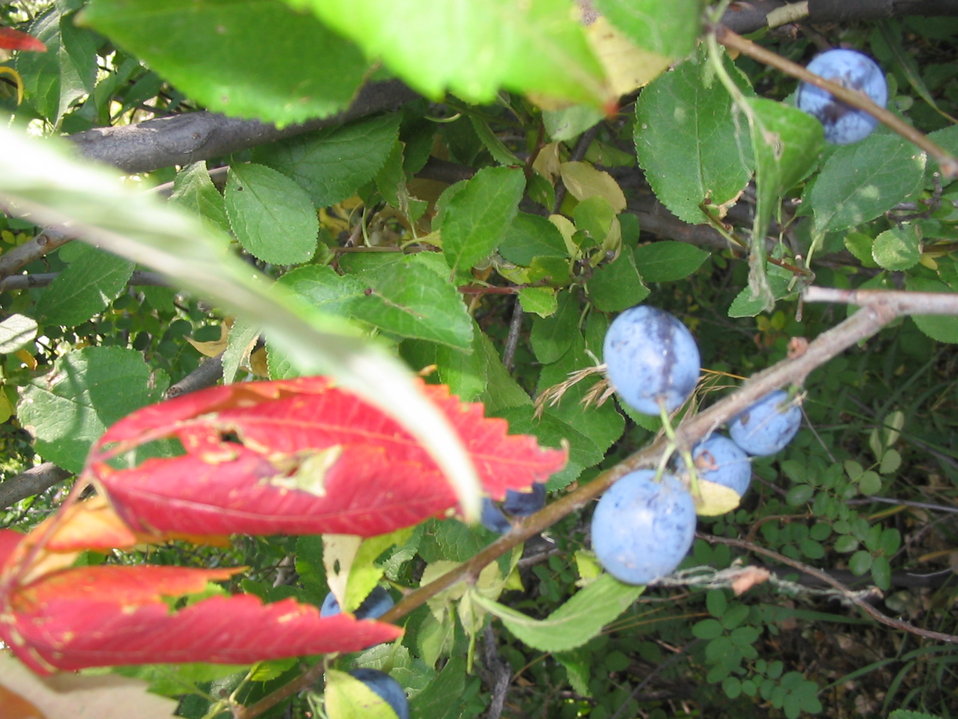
Fruit